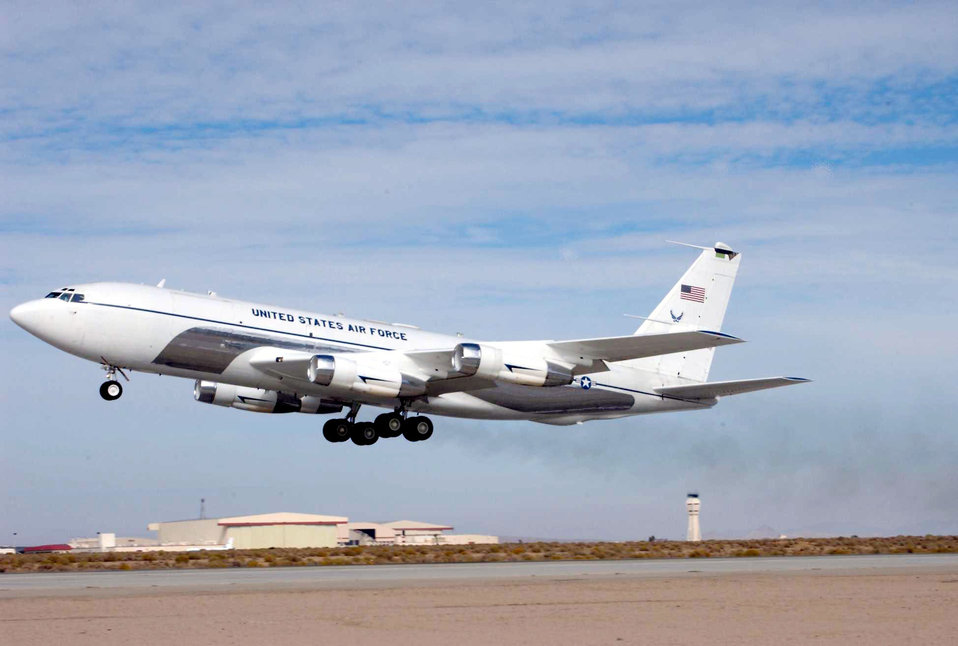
Speckled Trout tests LANs

EDWARDS AIR FORCE BASE, Calif. -- A C-135C Speckled Trout takes off from here during a test mission of the local-area-network system recently installed. A six-month test was launched to see if this commercial off-the-shelf system can provide high-speed Internet, e-mail voice-over Internet protocol and video teleconferencing capabilities.